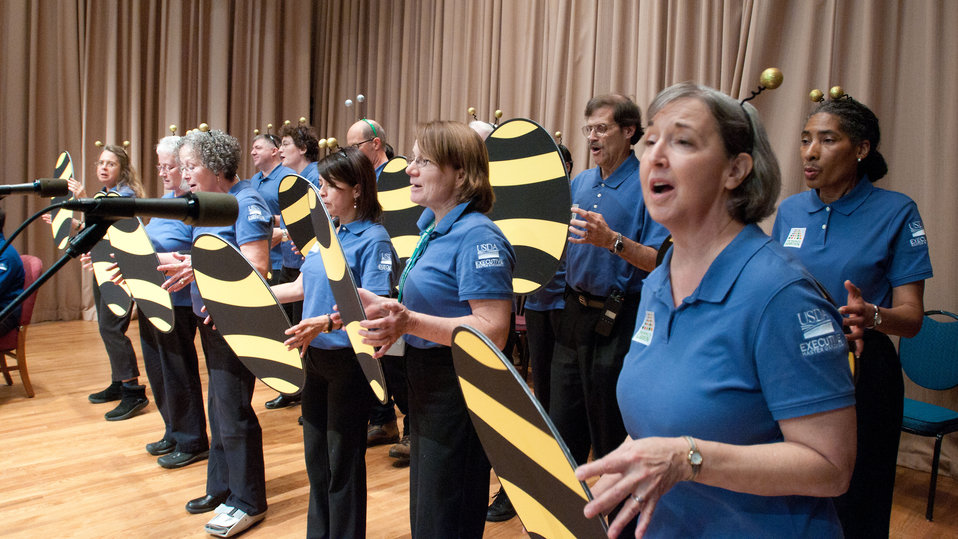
Graduation day of the 2011 U.S. Department of Agriculture (USDA) Executive Master Gardeners, on Tuesday, November 8, 2011 in Washington, DC. During the past six-weeks, students contributed 40-hours of volunteer time, completed studies and testing to receive their certificates today as an Executive Master Gardener. Many of the sessions occurred before work hours, during lunchtime or at community garden project sites such as Powell Middle School. USDA challenges its employees to establish People's Gardens at USDA facilities worldwide or in community gardens. People's Gardens vary in size and type, but all have a common purpose - to help the community and the environment. To learn about the People’s Garden Initiative visit www.usda.gov/wps/portal/usda/usdahome?contentid=peoples g....